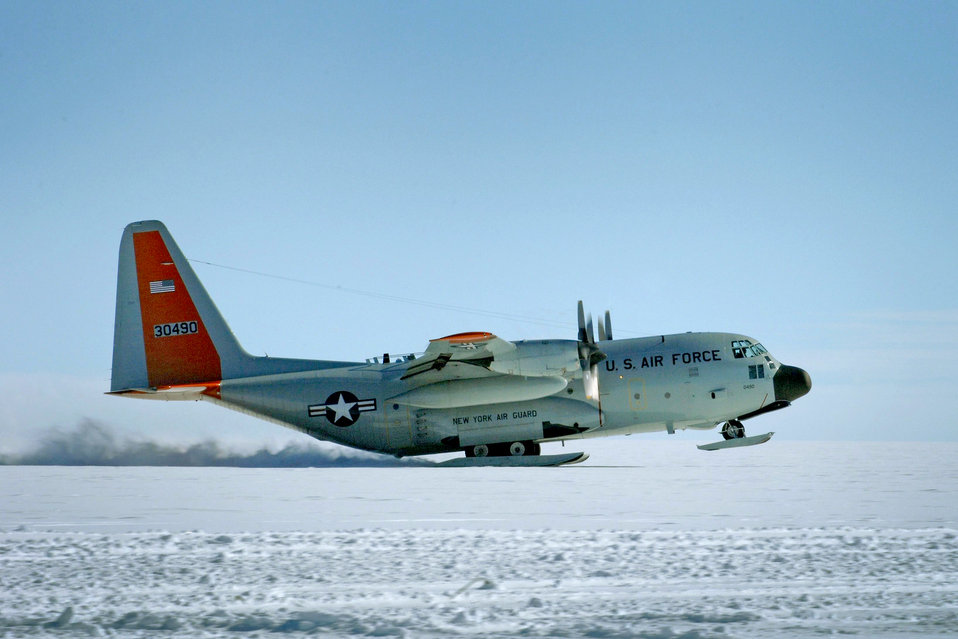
Away we go

The crew of a ski-equipped LC-130 Hercules from the New York Air National Guard's 109th Airlift Wing takes off July 28, 2010, from a remote science research site on Greenland's ice sheet. The 109th AW is the only military unit to fly such aircraft and has flown missions to Greenland since 1975. The unit now provides airlift support to the National Science Foundation's polar research program there.